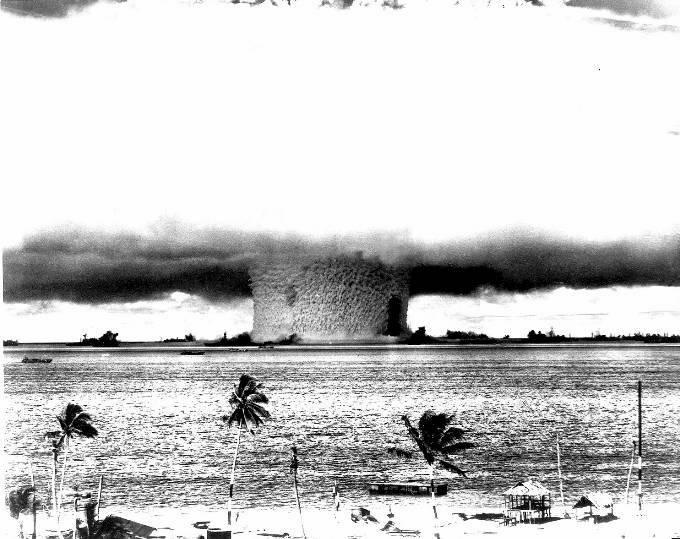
Baker test at bikini atoll. (July 24, 1946)